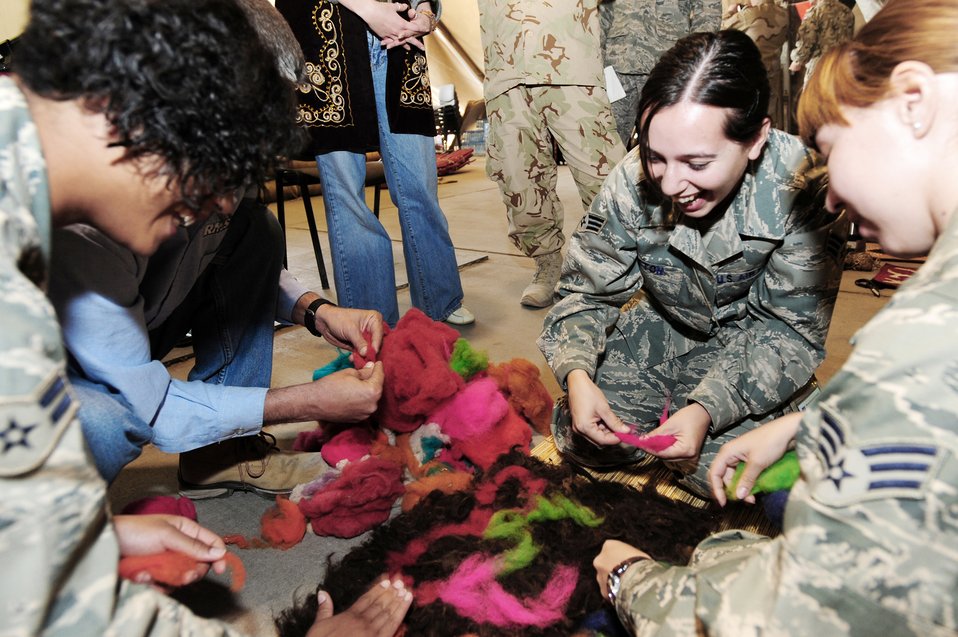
Airmen learn traditions during Kyrgyz Cultural Day

Senior Airmen Alaina Acton (center) and Maria Gates (right) design a carpet with Airman 1st Class Mariah Ham (left) in the Kyrgyz tradition of rugmaking during Kyrgyz Culture Day at the Transit Center at Manas, Kyrgyzstan recently.